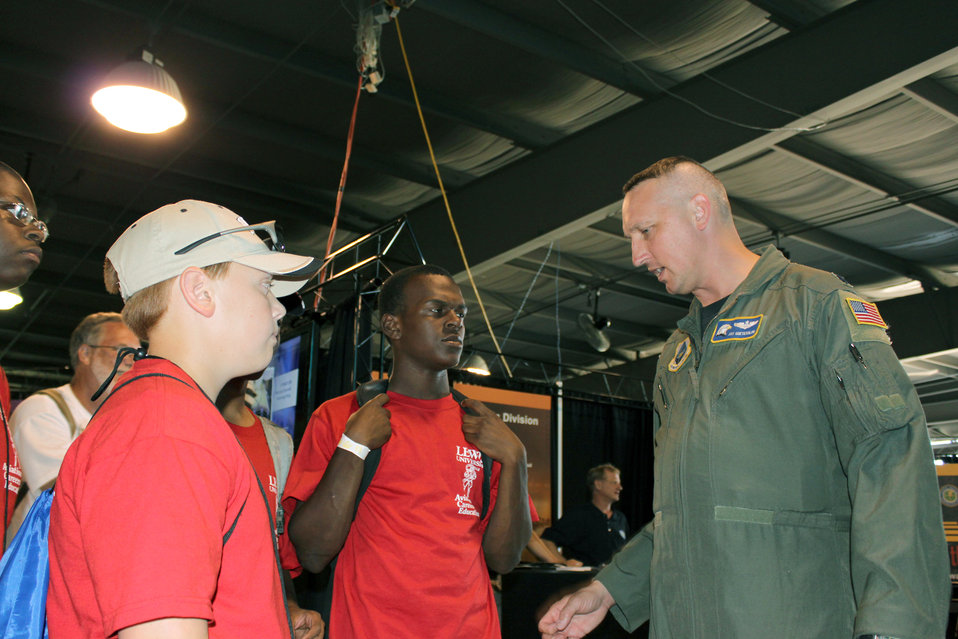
RPA safety message

Lt. Col. Jay Guetersloh, the remotely piloted vehicle safety branch chief at the Air Force Safety Center at Kirtland Air Force Base, N.M., describes Air Force RPA operations and safety to a group of teenage students involved in an aviation awareness camp July 29, 2010, during the Experimental Aircraft Association's Airventure 2010 at Oshkosh, Wis.